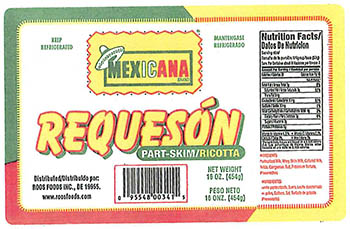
RECALLED – Variety of cheeses

February 25, 2014 – Product Recall – EXPANDED - Roos Foods Voluntarily Recalls Variety of Cheeses (listed below) Due to Possible Health Risk.